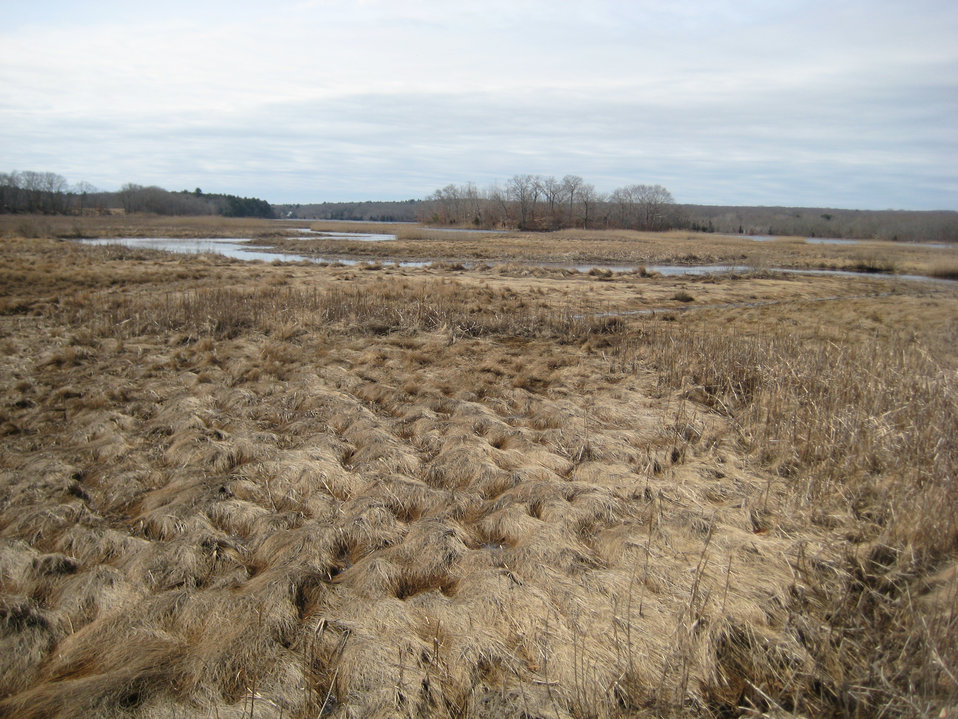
Salt marsh in the Buzzards Bay watershed, Massachusetts. Supported by the North American Wetlands Conservation Act.